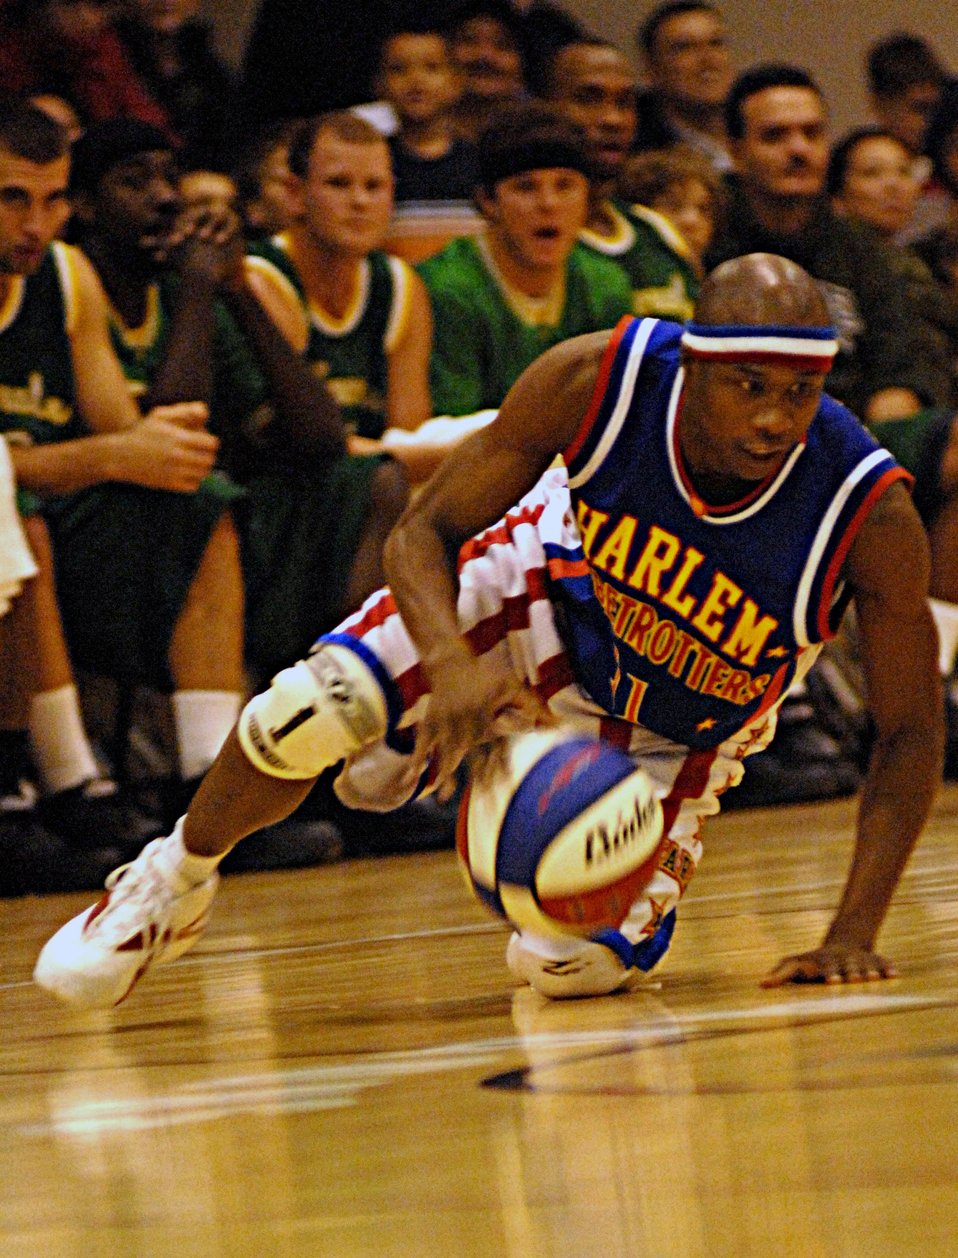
Harlem Globetrotters share the magic

Harlem Globetrotter